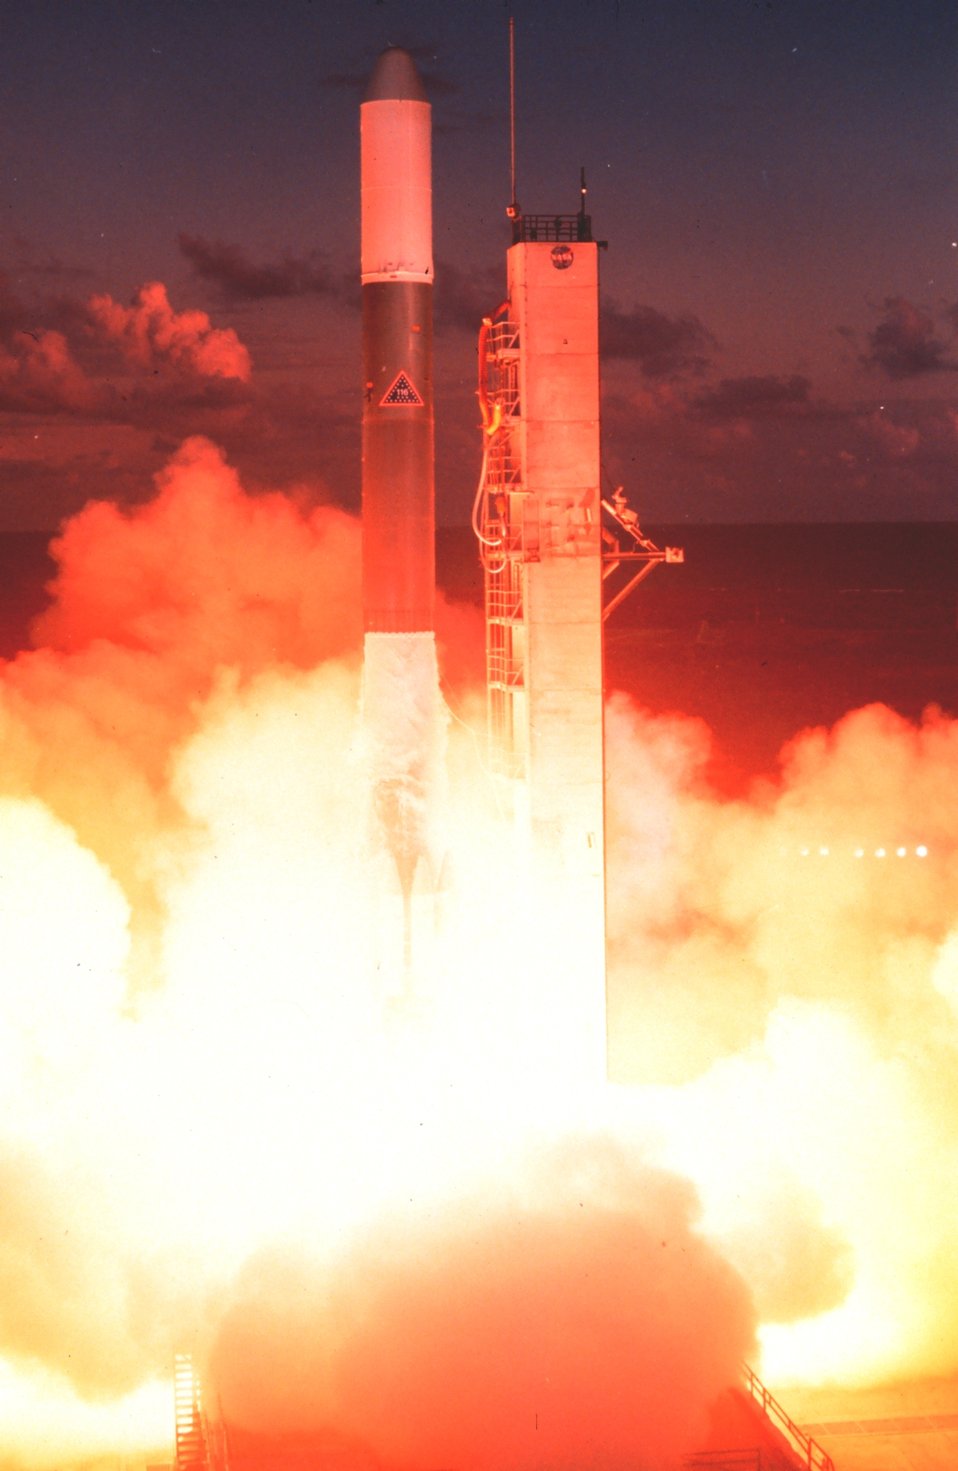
The launch of GOES-A, designated GOES 1 upon becoming operational.